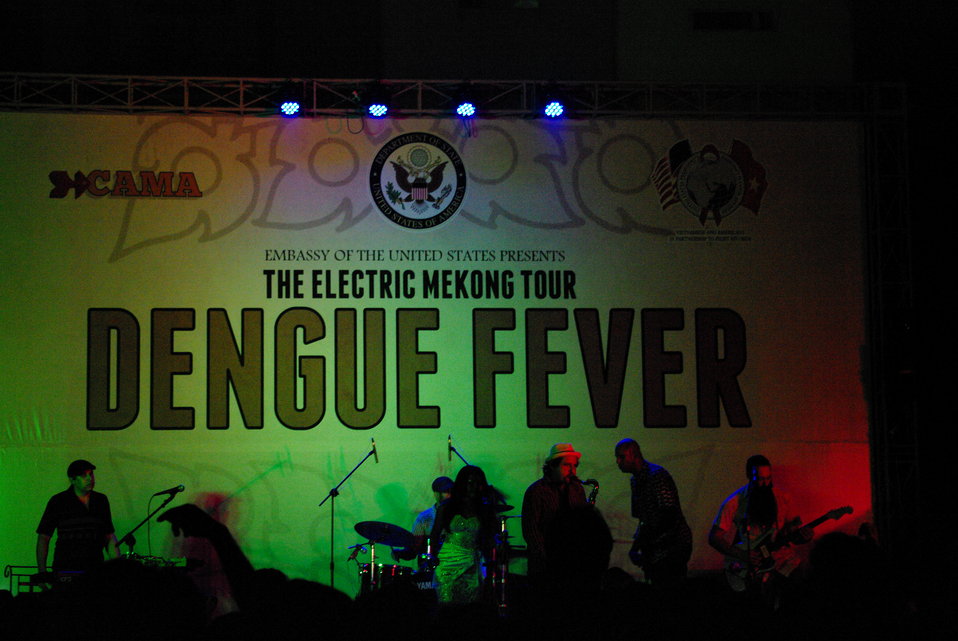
PEPFAR, U.S. Embassy Host Dengue Fever Concert in Hanoi